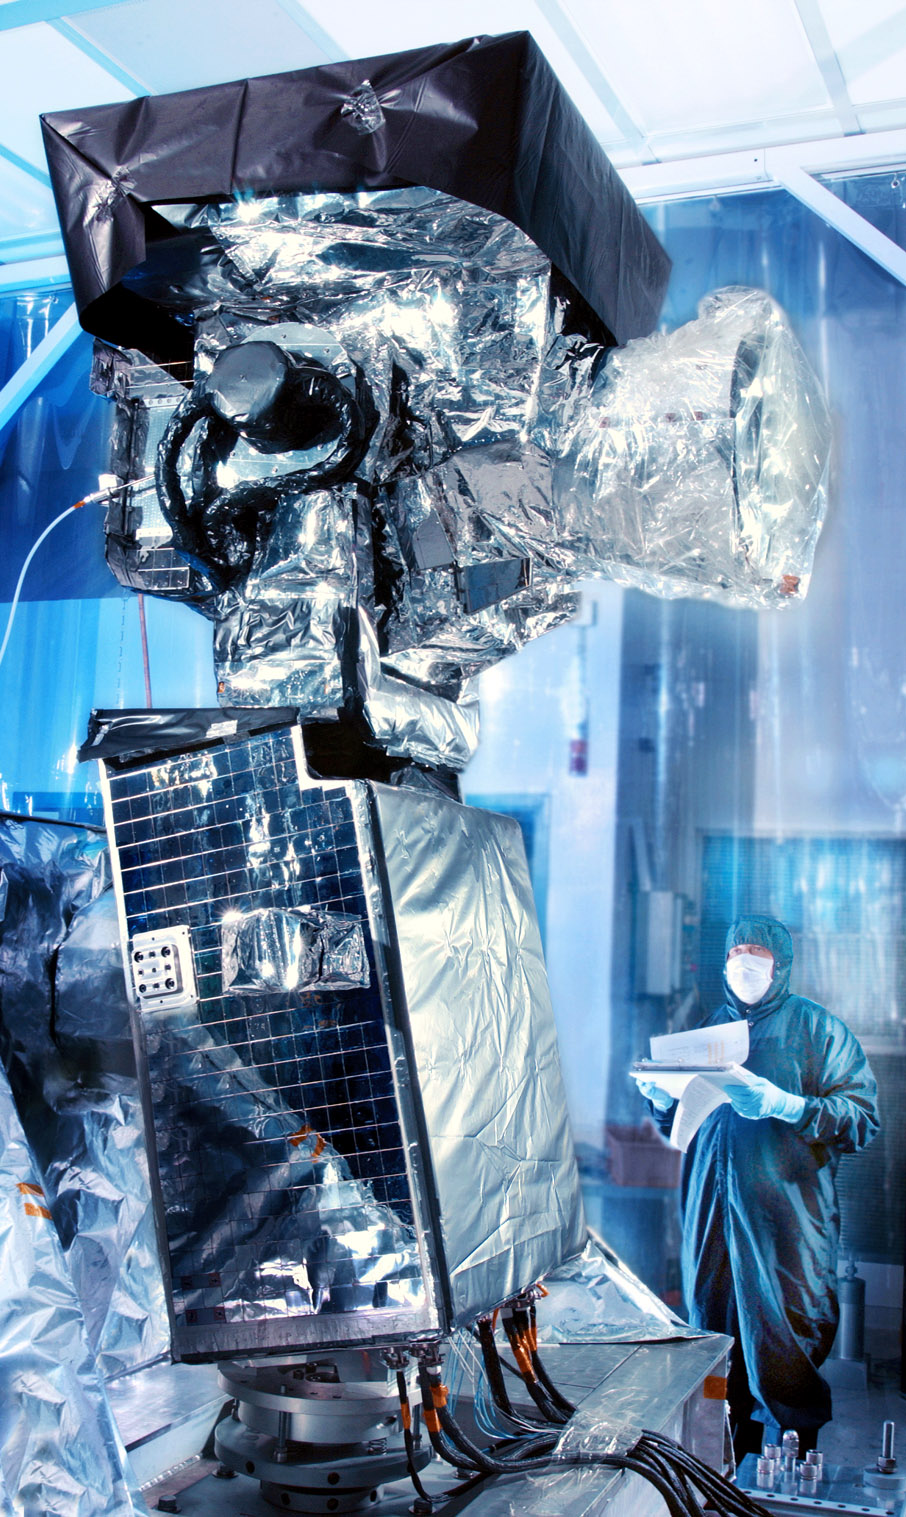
SBIRS instructors hold keys to ground floor of new payload

Lockheed Martin's Space Based Infrared Systems team extensively tested the Highly Elliptical Orbit-1 payload at Northrop Grumman's Azusa, Calif., facility prior to launch. The HEO payload will scan a larger region than the current system for ballistic missile launches. Training will begin Jan. 12 and 16 at Schriever Air Force Base, Colo., for future SBIRS crews.